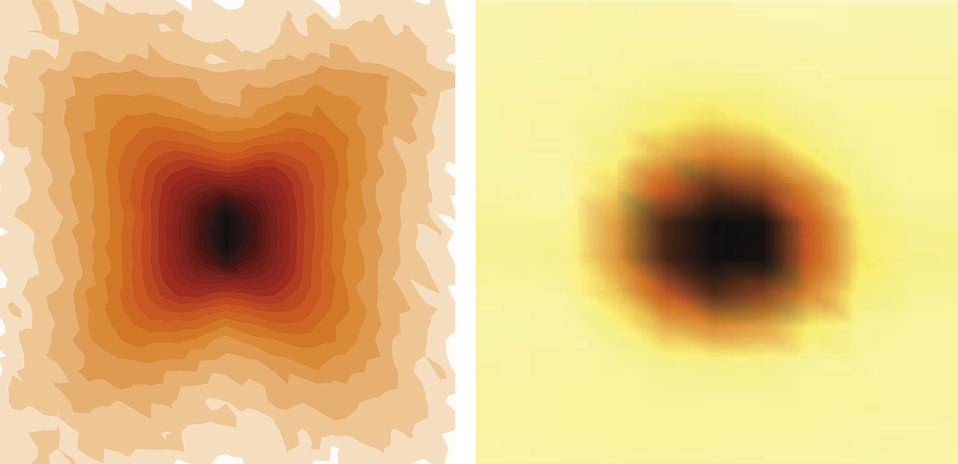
PMN and PZT

These two neutron scattering images represent the nanoscale structures of single crystals of PMN and PZT. Because the atoms in PMN deviate slightly from their ideal positions, diffuse scattering results in a distinctive butterfly shape quite different from that of PZT, in which the atoms are more regularly spaced.